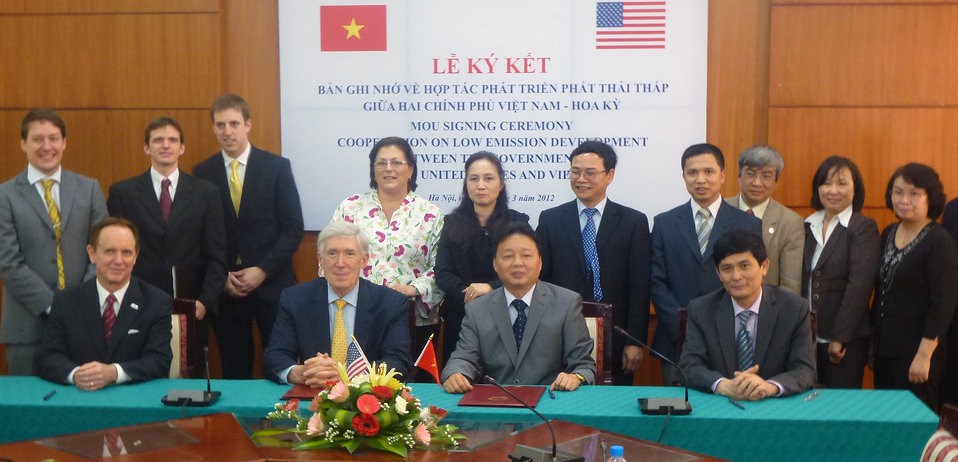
U.S.-Vietnam MOU on Low Emissions Development Strategies Signing Ceremony